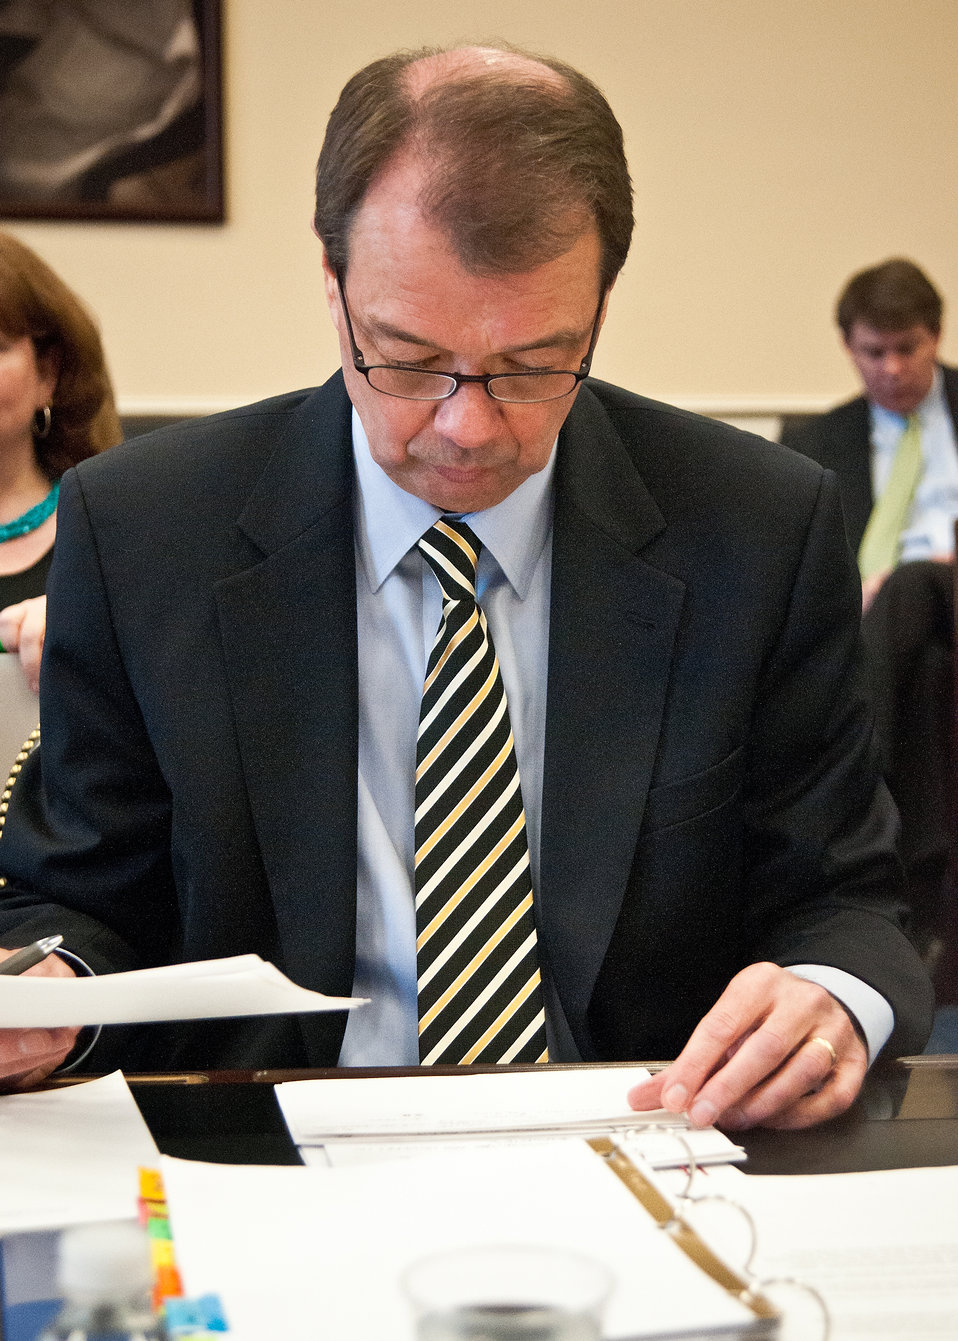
Robert Keeney, Acting Administrator, Agricultural Marketing Service prepares talking points prior to testifying on Capitol Hill along with representatives of the Marketing and Regulatory Program agencies before the House Agriculture Appropriations Subcommittee on the agencies fiscal year 2013 budget requests in Washington, D.C., Tuesday, March 6, 2012.